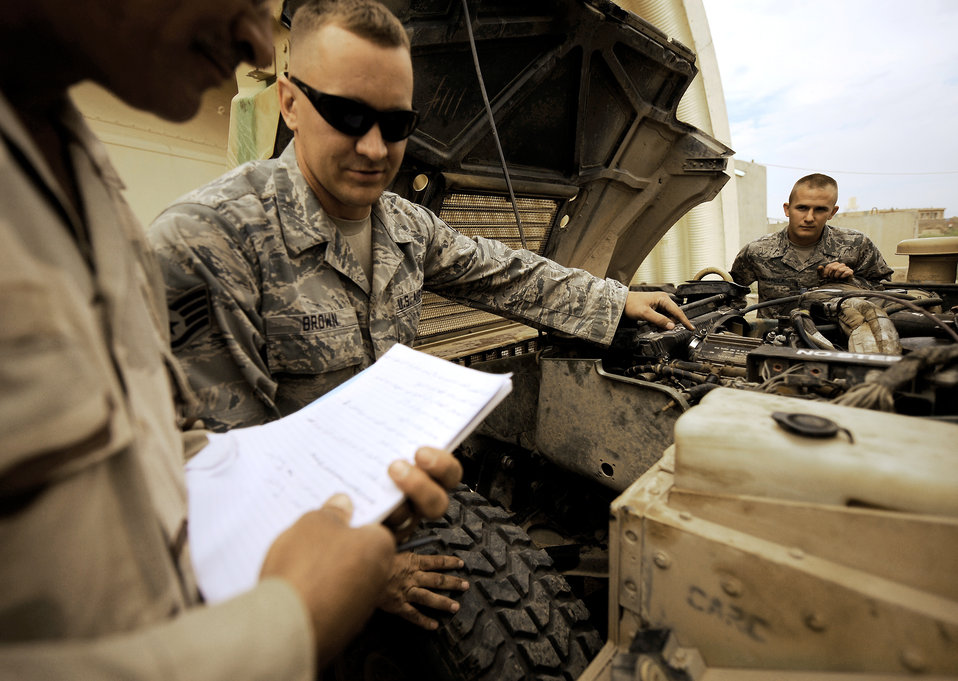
Logistics Airmen play crucial dual-role before Kirkuk transition

Staff Sgt. Jedidiah Brown shows Iraqi airmen tricks of the trade when maintaining humvees during a training session April 6, 2011, at Kirkuk Regional Air Base, Iraq. Sergeant Brown is deployed from F.E. Warren Air Force Base, Wyo., and calls Troy, Pa., his hometown. Sergeant Brown is a 321st Expeditionary Logistics Readiness Squadron vehicle maintainer.